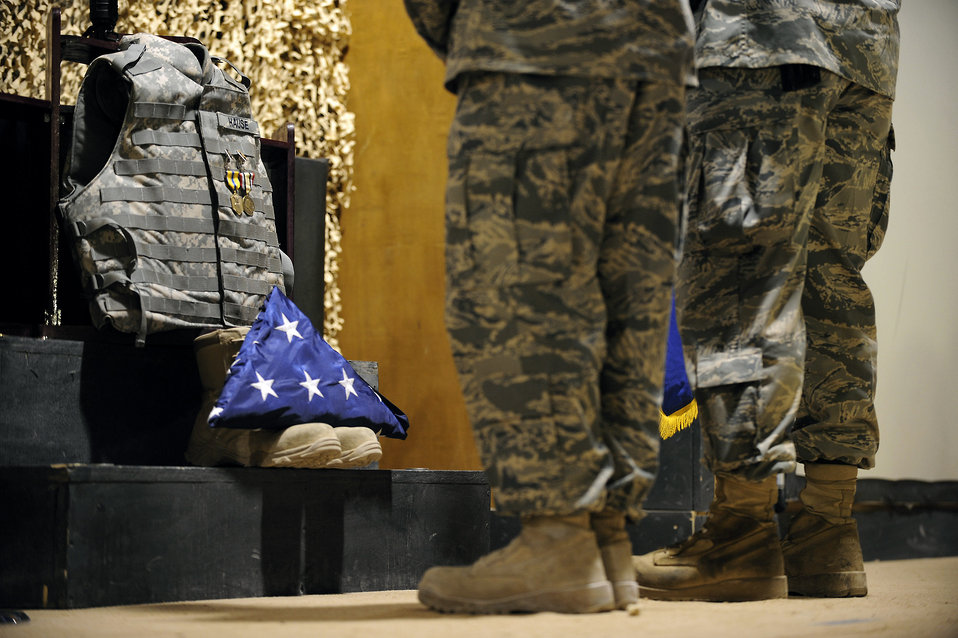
Joint Base Balad Airmen remember fallen wingman

Two Airmen pay their respects to Staff Sgt. Brian Hause during a memorial service held in his honor Oct. 27 at Joint Base Balad, Iraq. Sergeant Hause received an Air Force Commendation Medal and Iraq Campaign Medal posthumously for his contributions while deployed here from Shaw Air Force Base, S.C.